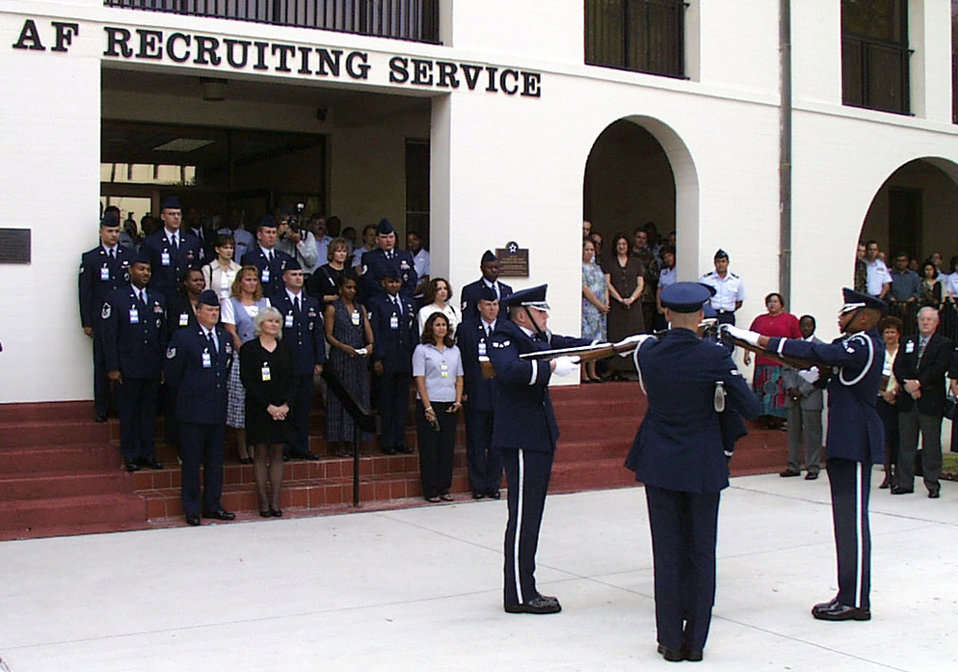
Top 10

SAN ANTONIO -- Members of the U.S. Air Force Honor Guard perform for the Air Force's top 10 recruiters and their spouses in front of the Air Force Recruiting Service headquarters here Oct. 3. Together, the 10 recruiters brought nearly 700 people into active-duty service during fiscal 2000.